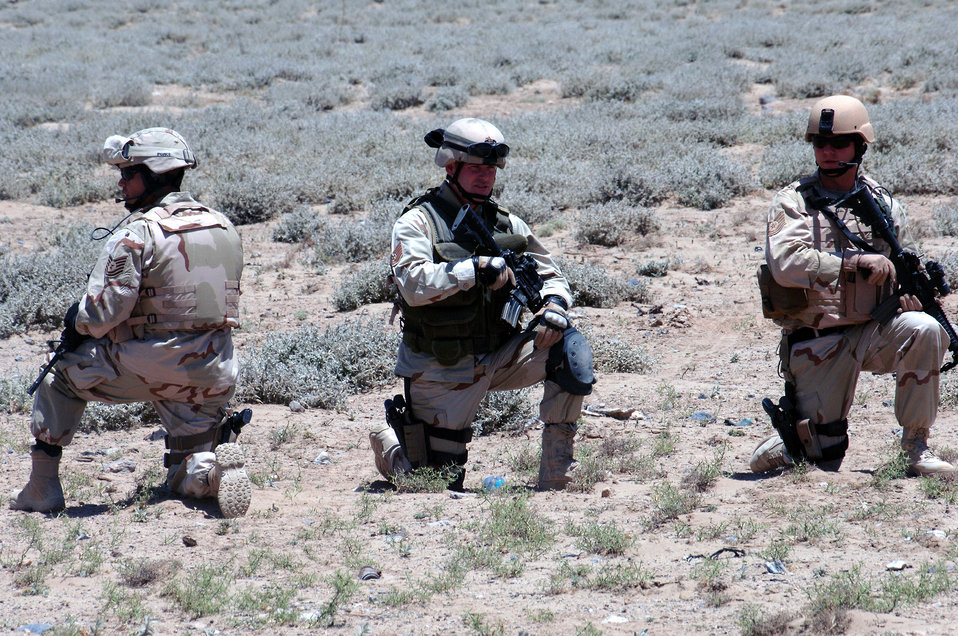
Training for convoy operations

Tech. Sgts. Rogelio Ponce, Joseph Ilsley and Christopher Hann maintain a 360-degree security perimeter around an explosive ordnance disposal team's detonation site June 13 outside of Bagram Air Base, Afghanistan. The sergeants, with the 455th Expeditionary Security Forces Squadron, are deployed from Vandenberg Air Force Base, Calif.